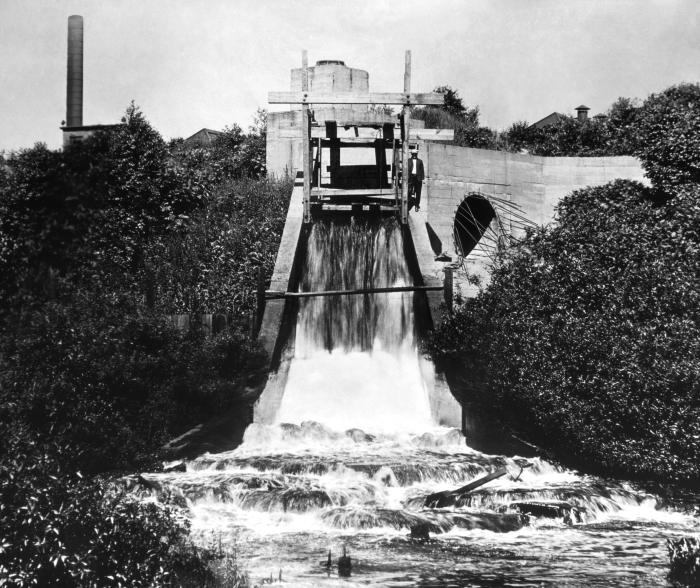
This historic image depicted a large weir that had been installed at a Morgan Park, Minnesota waterway near Duluth, in order to measure waste water flow during the 1929 St. Louis River environmental investigation. The 'weir method' is a way of determining the volume of a fluid by measuring its flow. This study, and later studies in 1948, and 1973, showed a progressive deterioration of the water quality in the river, as well as in nearby Spirit Lake.